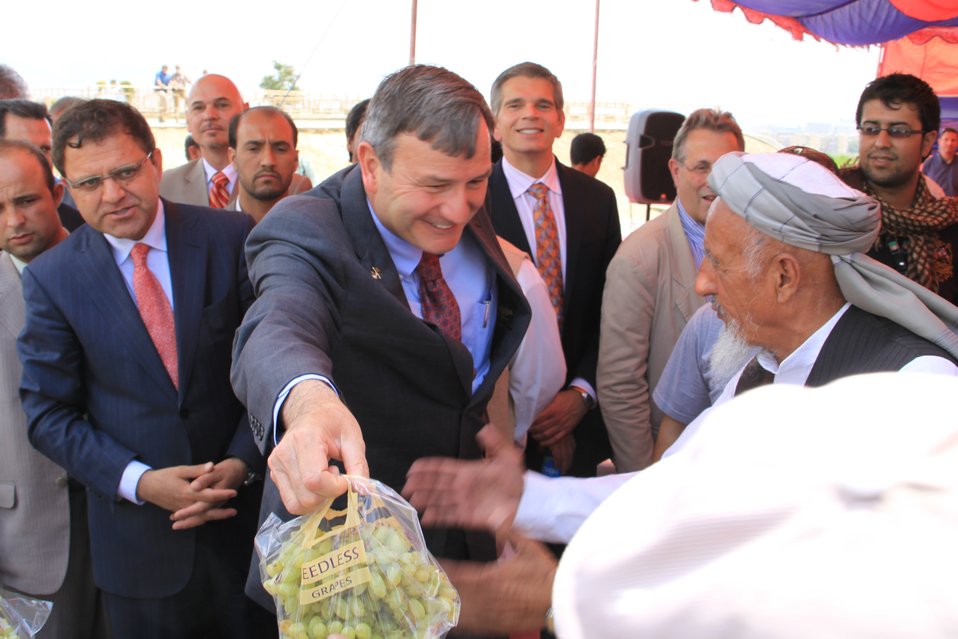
Badam Bagh Farm